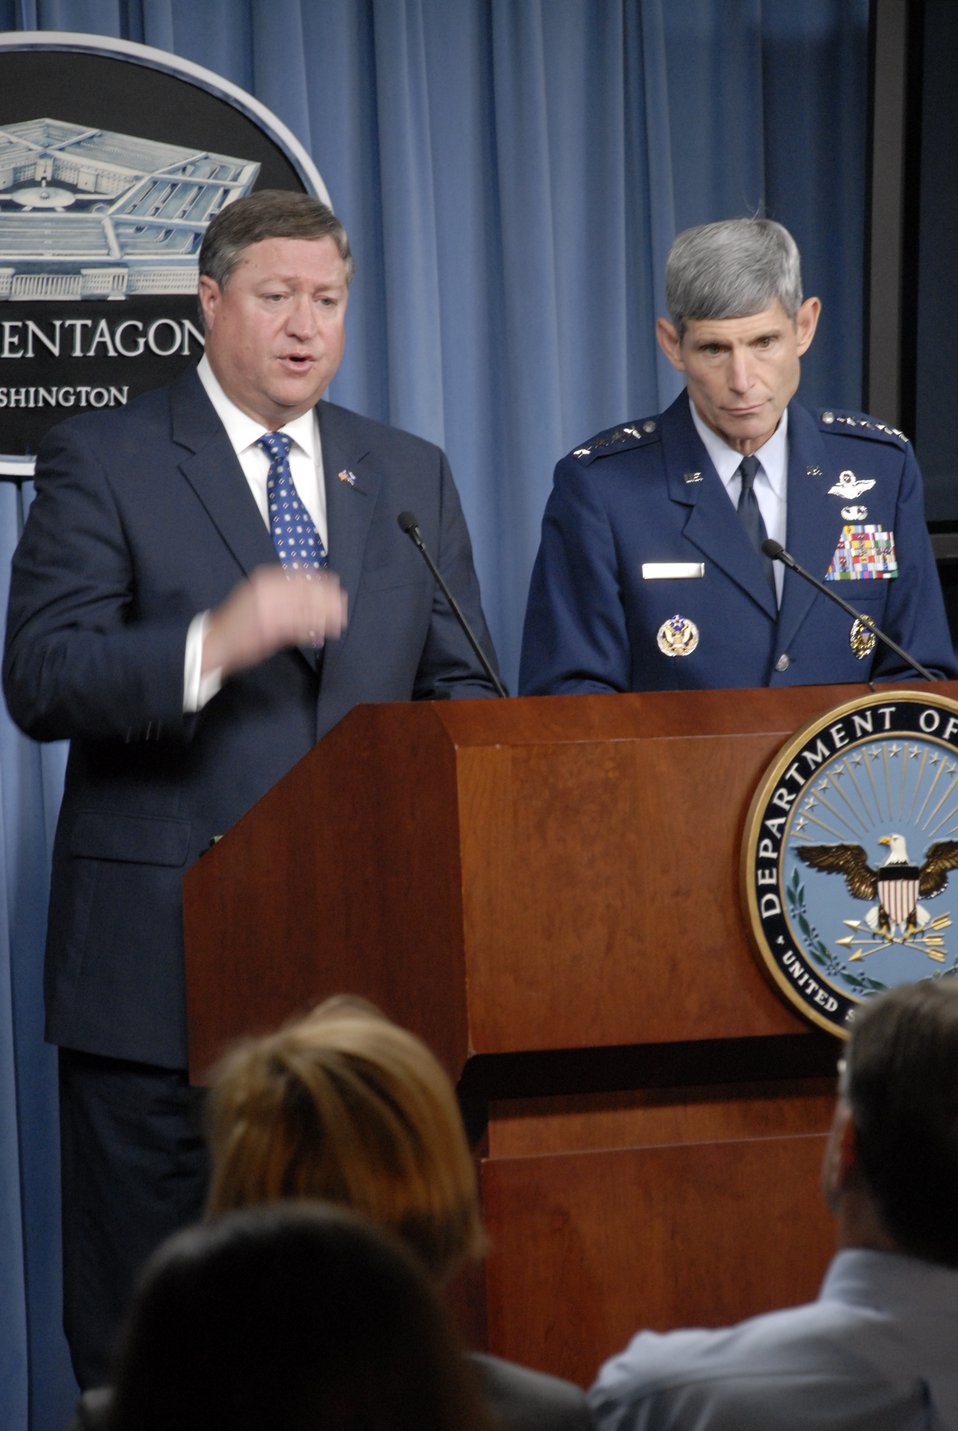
SECAF, CSAF press conference

Acting Secretary of the Air Force Michael B. Donley and Air Force Chief of Staff Gen. Norton A. Schwartz hold a press conference Aug. 12 to outline their top priorities for the coming months.